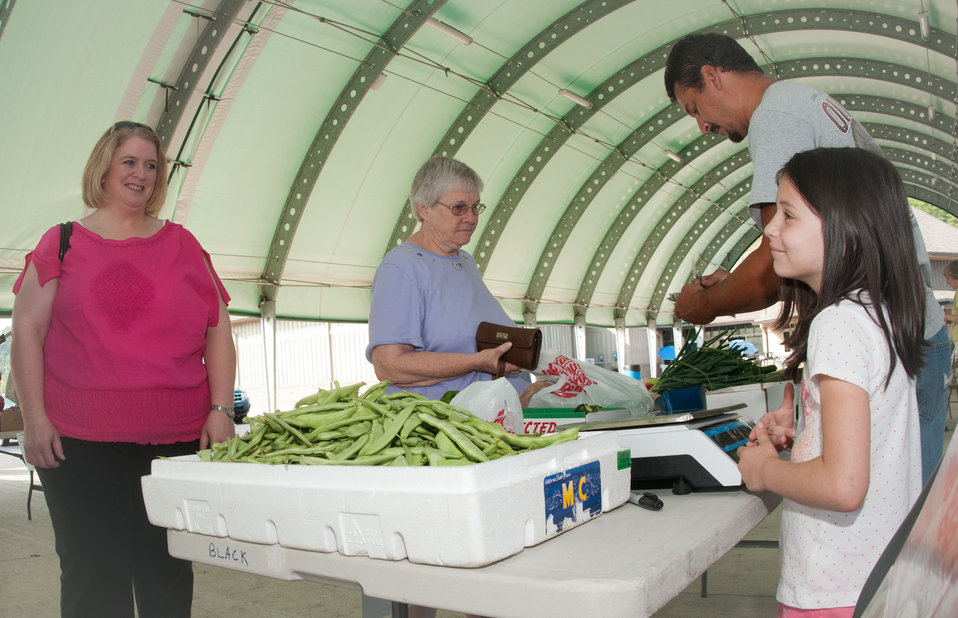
Kaylee Black (7, right) generates product interest while her dad Doug Black (second from right) makes sale at the Bath County Agricultural Education and Marketing Center, Owingsville, KY, on Friday, July 15, 2011. They are certified to recieve Senior Farmer's Market Nutrition Program checks from customers. The Center was the recipient of a $400,000 Rural Business Enterprise Grant. It has given farmers and producers from Bath and surrounding counties the opportunity to manufacture and market their locally grown and locally produced value-added and “Kentucky Proud” branded products, including but not limited to, fresh produce, artisan crafts and specialty food products. The Center is open year-round and allow residents to sell products in four different retail categories, including Kentucky products, regional crafts, “green” groceries and bakery/deli. Several producers expressed their gratitude for Rural Development’s assistance in making the center a reality. The project was made possible through American Recovery and Reinvestment Act of 2009 funding enacted by the 111th United States Congress in February 2009 and signed into law on February 17, 2009, by President Barack Obama.